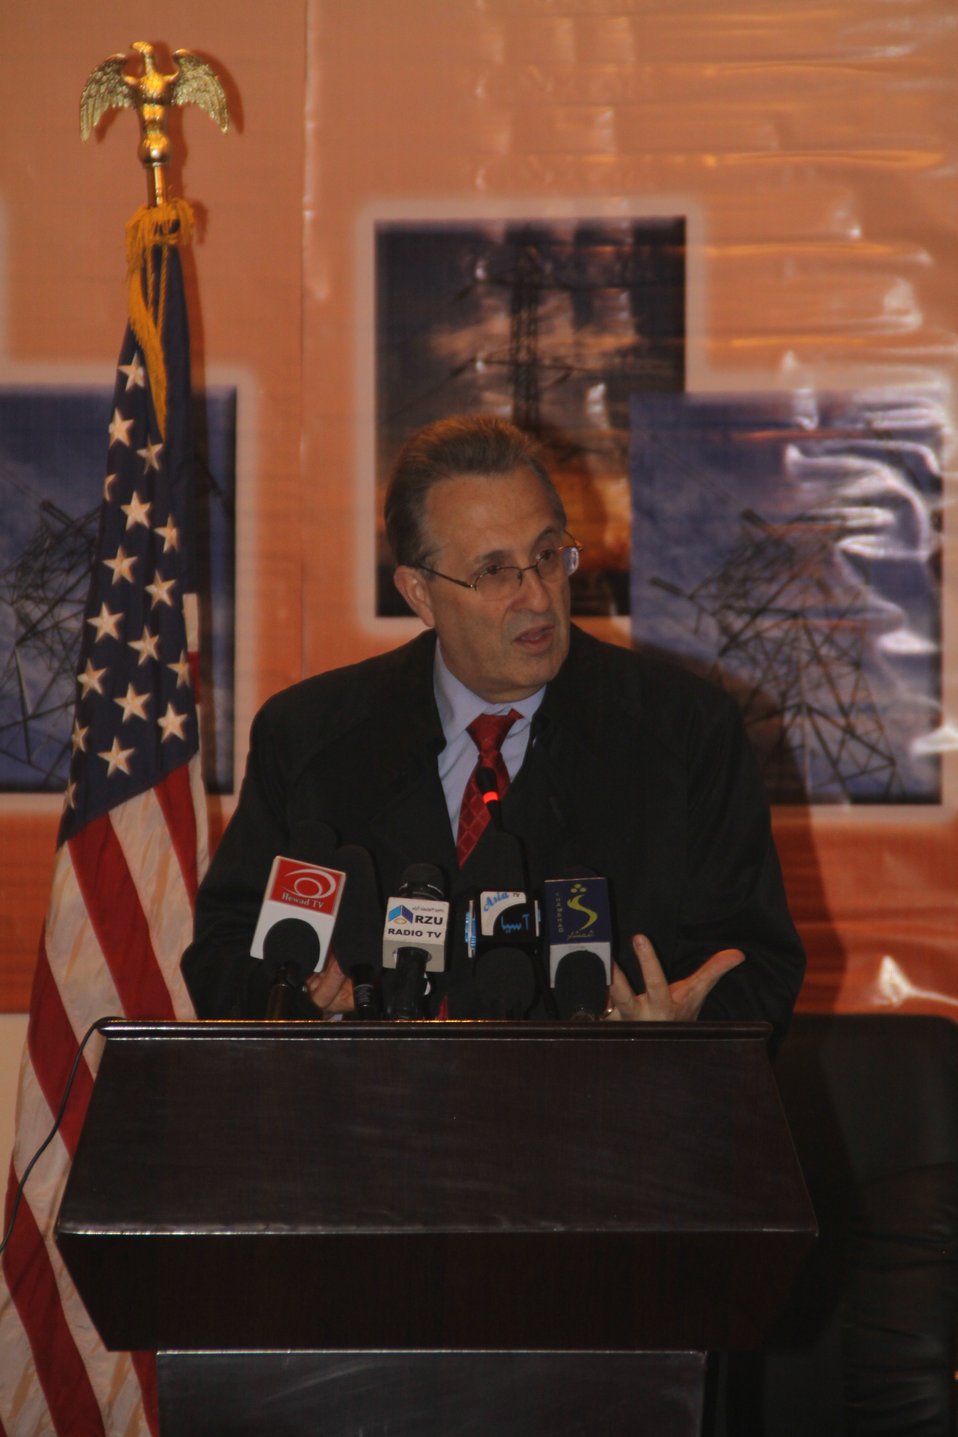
U.S. Ambassador E. Anthony Wayne